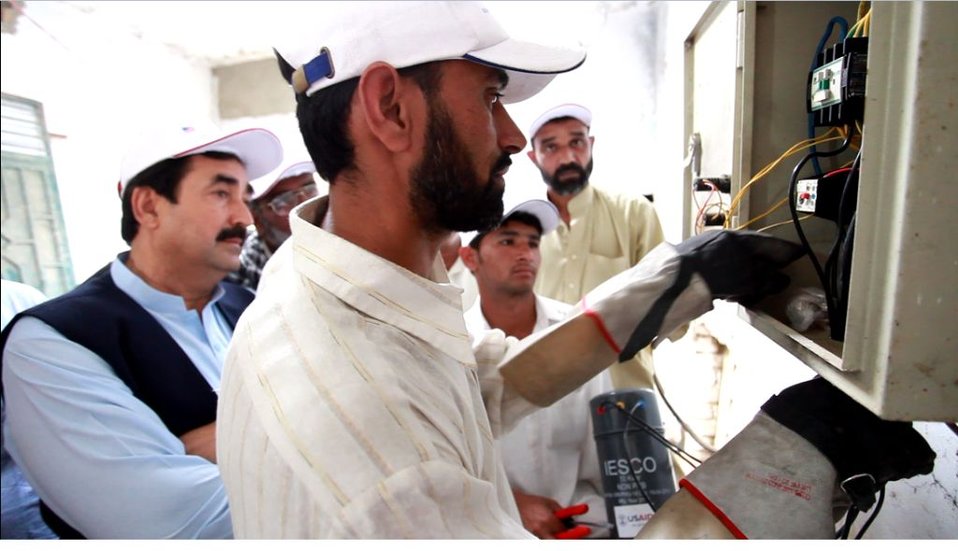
Usaid To Provide Technical Assistance To Improve Efficiency Of Tube-Wells In Iesco By Installing 2600 Lt Capacitors at Islamabad on April 26, 2012